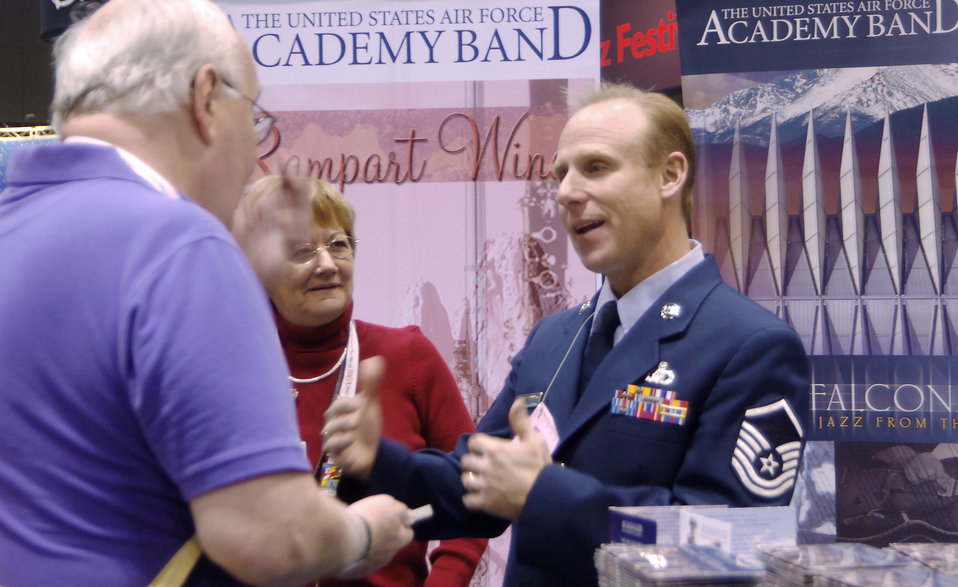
Academy band shares love of music, profession at Midwest Clinic

Master Sgt. Steve Przyzycki talks to Wayne Karge about the Academy Dec. 17, 2010, in Chicago during the Midwest Clinic International Band and Orchestra Conference. More than 16,000 people attended the event. Sergeant Przyzycki is a percussionist with the Air Force Academy band, and Mr. Karge is a band director in Palatine, Ill.